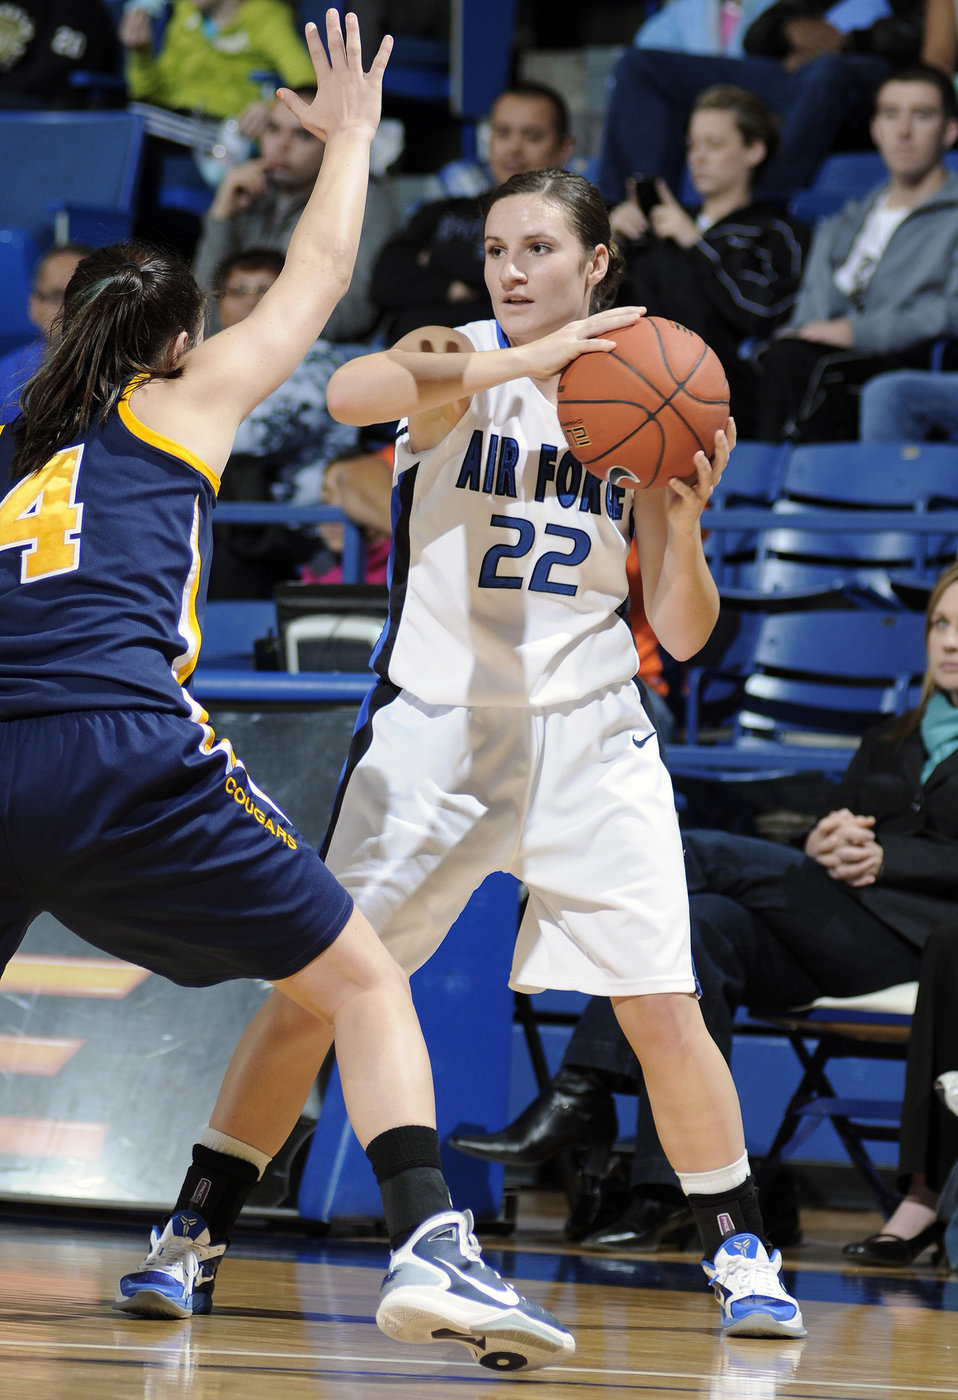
Women's basketball team defeats CCU Lady Cougars

Air Force Academy senior guard Raimee Beck looks for an open teammate as the Falcons defeated Colorado Christian University 68-58 Nov 28, 2010, at Air Force Academy's Clune Arena in Colorado Springs, Colo.